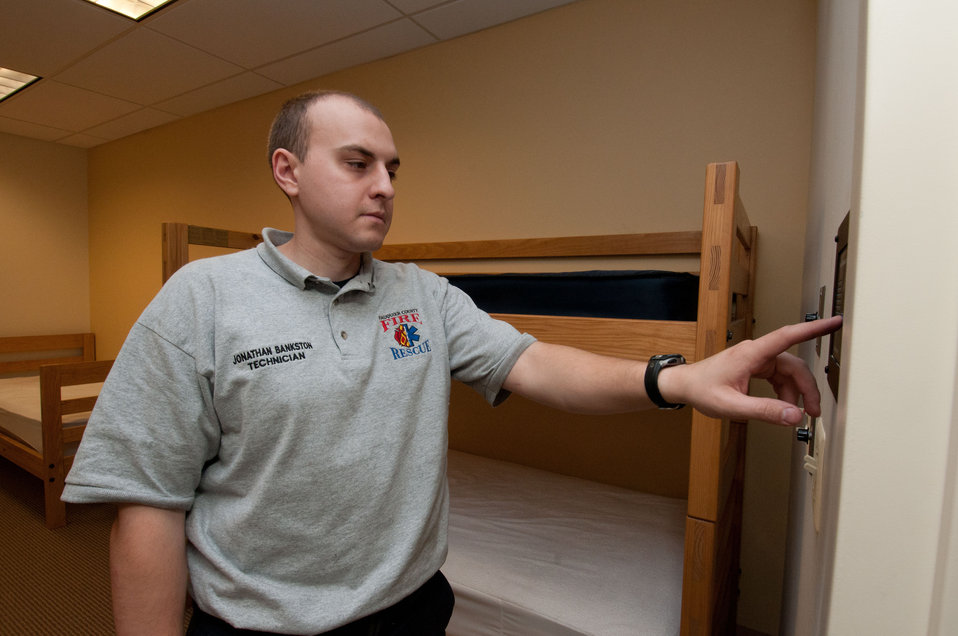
Technician Jonathan Bankston uses a two-way communications panel to communicate with the dispatch office in case he needs to respond to a call at the Catlett Volunteer Fire - Rescue, Station 7, Catlett, VA, on Wednesday, May 4, 2011.